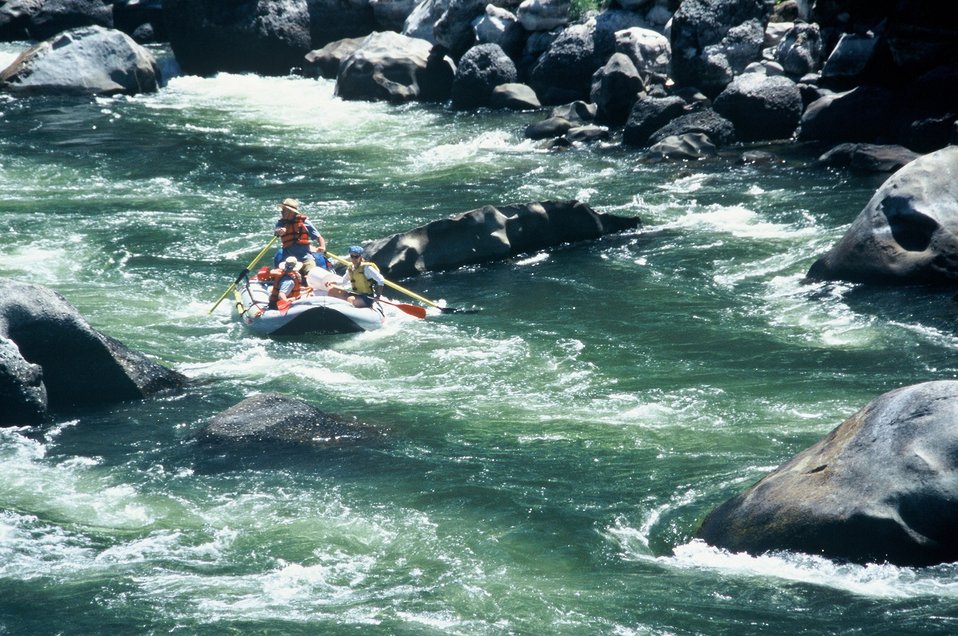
Blossom Rapids